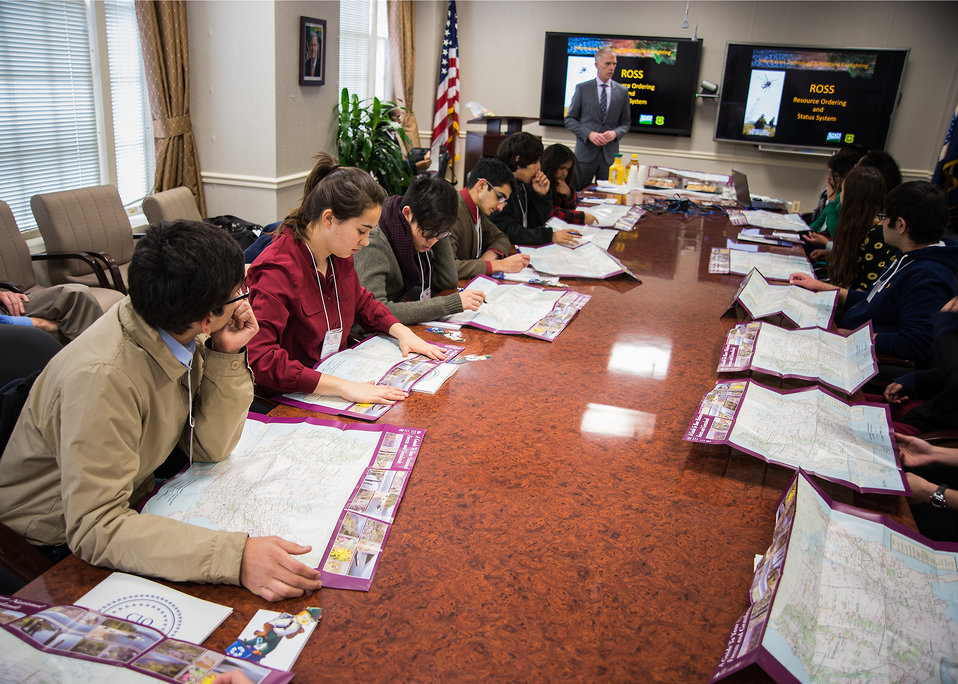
Shani Cave, a student from Thomas Jefferson High School of Science and Technology in Alexandria, VA. reviews, 'A Guide to Your National Forests and Grasslands' during the U.S. Department of Agriculture (USDA), Office of the Chief Information Officer (OCIO) IT Job Shadow Day, Tuesday, Mar. 25, 2014. The OCIO IT Job Shadow Day hosts students from local high schools in the Washington, D.C. area annually with IT professionals and agricultural specialists from a variety of mission areas at USDA.